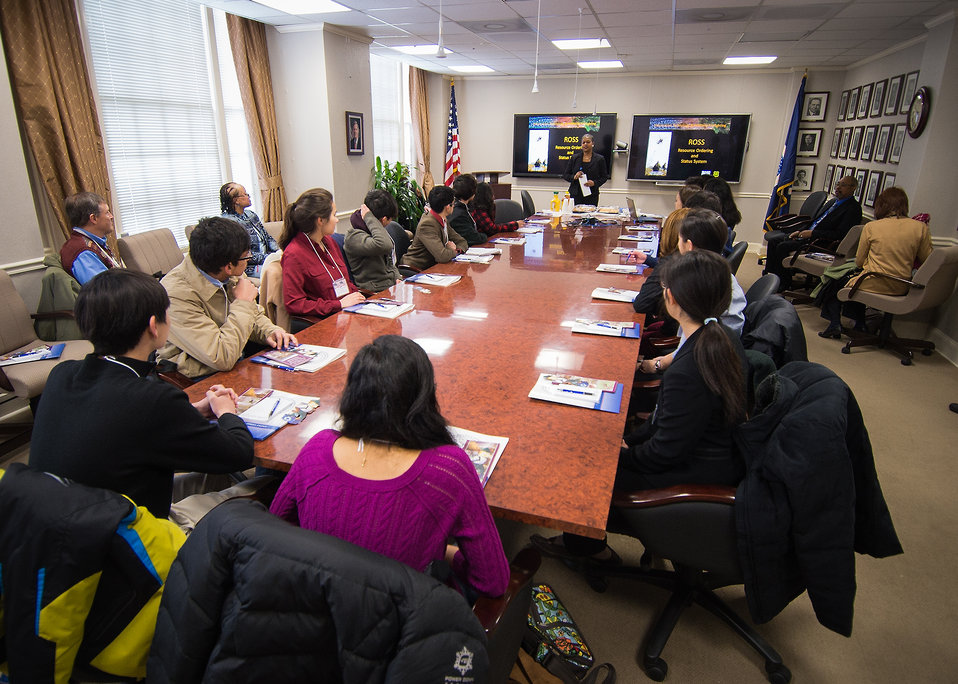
Yvonne Jackson, Assistant Chief Information Officer welcomes Thomas Jefferson High School of Science and Technology students to the U.S. Department of Agriculture (USDA), Office of the Chief Information Officer (OCIO) IT Job Shadow Day, Tuesday, Mar. 25, 2014. The OCIO IT Job Shadow Day hosts students from local high schools in the Washington, D.C. area annually with IT professionals and agricultural specialists from a variety of mission areas at USDA.